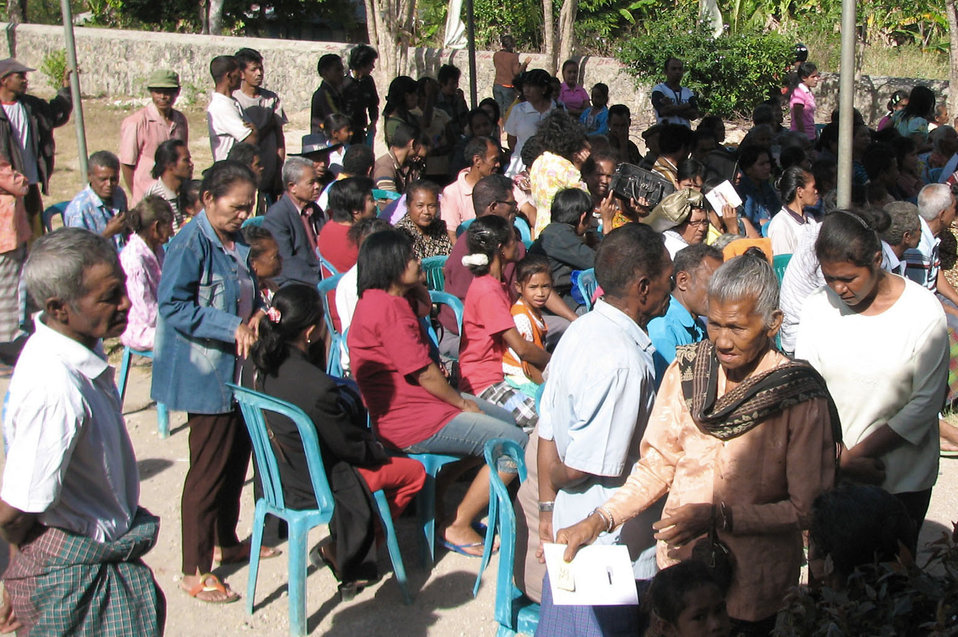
Airmen open medical clinic in Indonesia

Indonesians form a line prior to the opening of a clinic July 17 in Naioni, Indonesia. U.S. and Indonesian military medical professionals, one local doctor, and six interpreters worked side-by-side at the clinic to treat patients as part of Operation Pacific Angel 2009. During the first day, clinic members saw 329 patients.